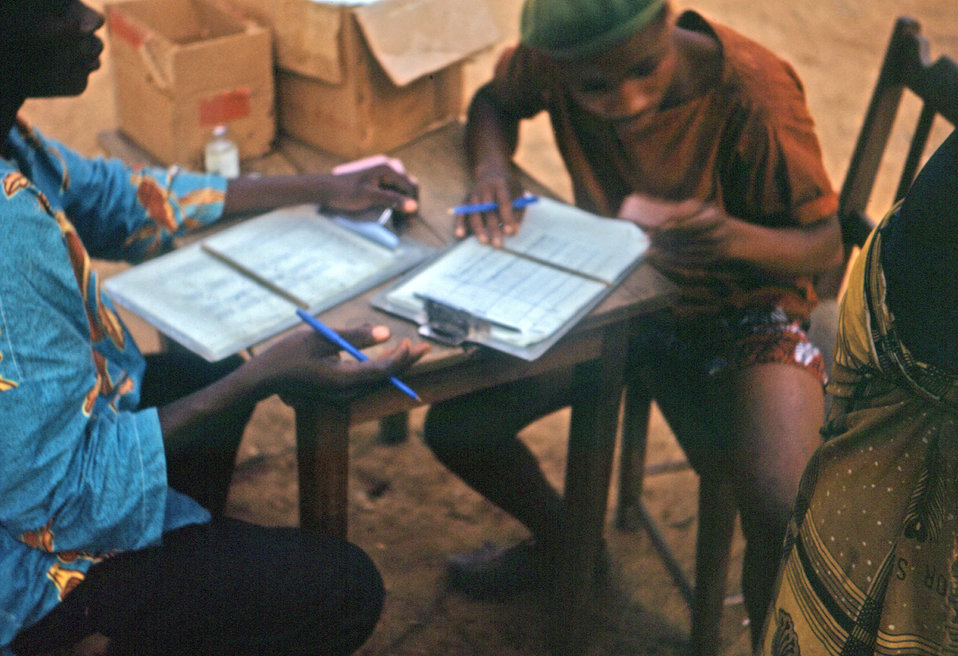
This 1968 photograph captured during the Nigerian-Biafran civil war, depicted a refugee relief camp worker as he checked the nutrition assessment card of a Nigerian refugee, in order to determine how much food he would then need to receive based on his nutritional status.